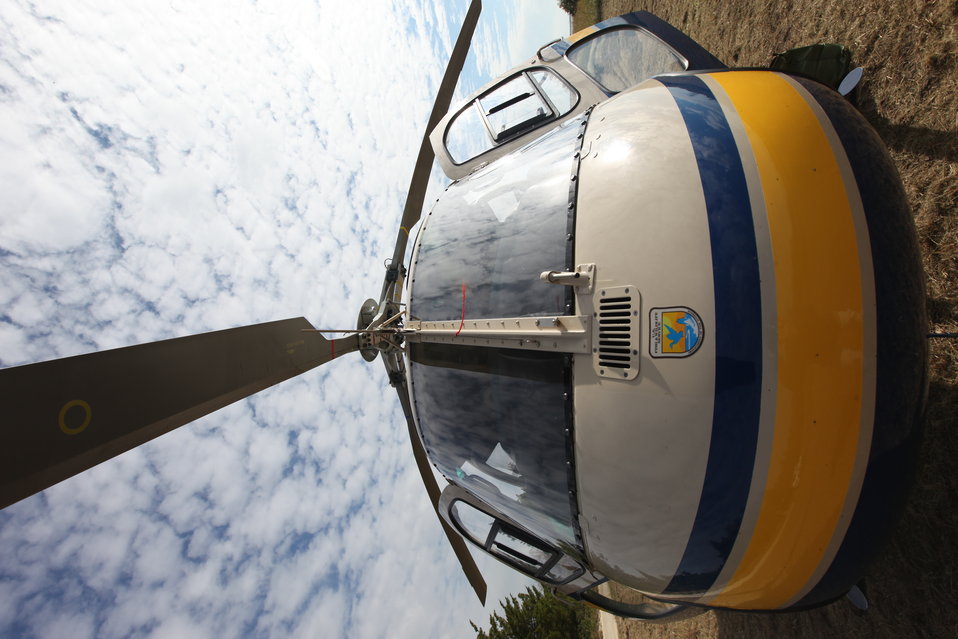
U.S. Fish and Wildlife Service helicopter

The Service is surveying damages along the coast following the storm.